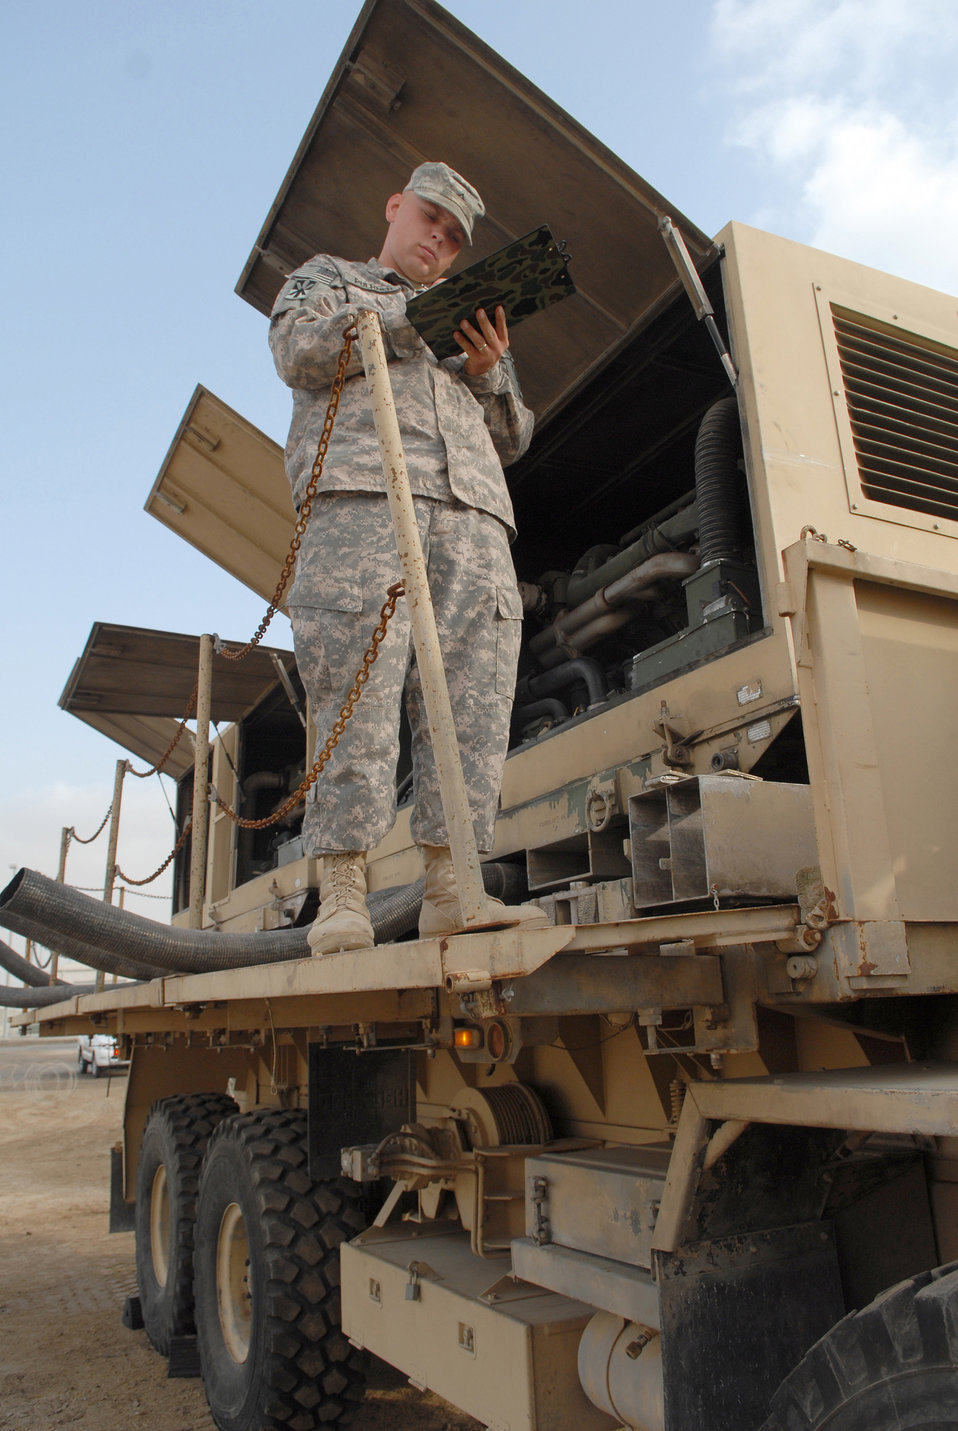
Airmen prep for Patriot's debut at Southwest Asian base

Army Pvt. Justin Puerner conducts preventive maintenance checks and services on an electrical power plant vehicle Jan. 3 at an air base in Southwest Asia. Private Puerner is deployed to the Air Force's 380th Air Expeditionary Wing from 5-52 Air Defense Artillery Battalion of Fort Bliss, Texas. The vehicles support the first Army Patriot mission to be incorporated into the 380th Air Expeditionary Wing's mission. Private Puerner is from Green Bay, Wis.